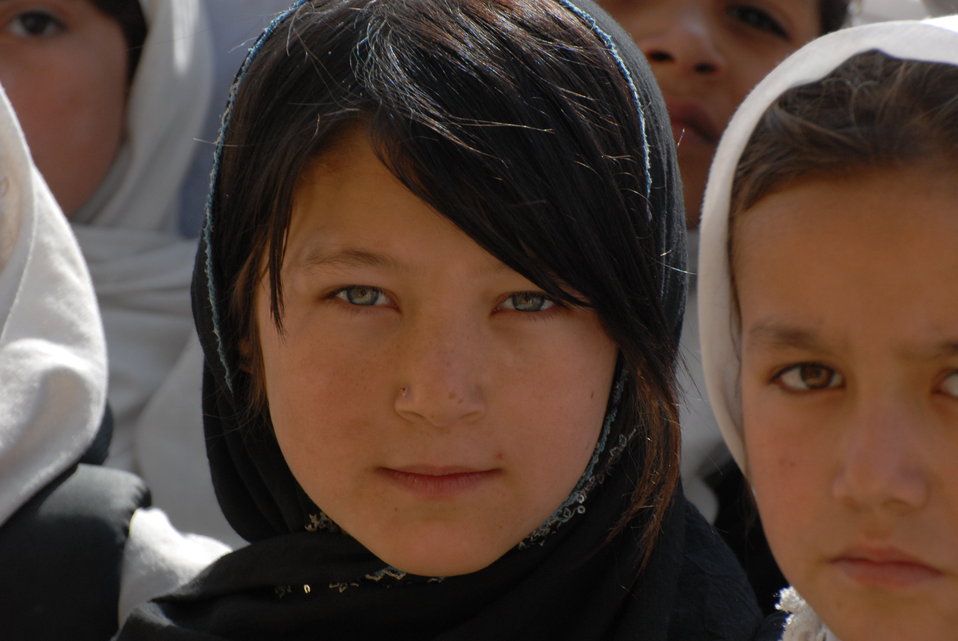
'On the Road' in Balkh Province